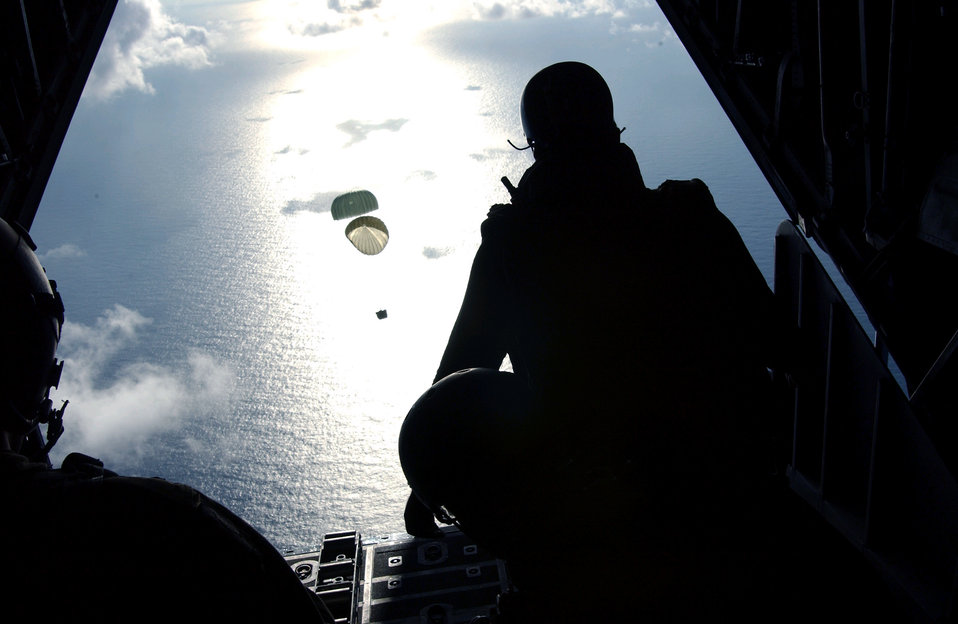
To the rescue

OVER THE ATLANTIC OCEAN (AFPN) - One of two pararescuemen from the 38th Rescue Squadron at Moody Air Force Base, Ga., prepares to follow an inflatable boat out the back of an HC-130, 350 miles northeast of the Caribbean island of St. Maarten to provide medical support to a Chinese fisherman July 23. The fisherman sustained a life-threatening chest injury the day before. After parachuting out, the pararescuemen reached the fishing vessel and helped the man.